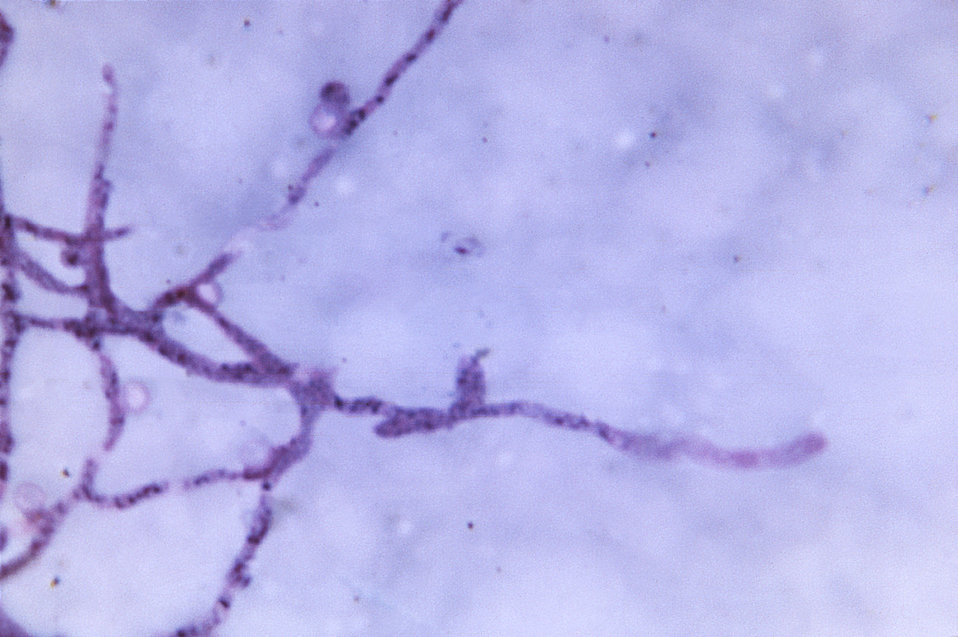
Magnified 1125X, this thick film photomicrograph revealed the presence of a Plasmodium vivax trophozoite, as well as a number of artifactual mold hyphae and a spore.